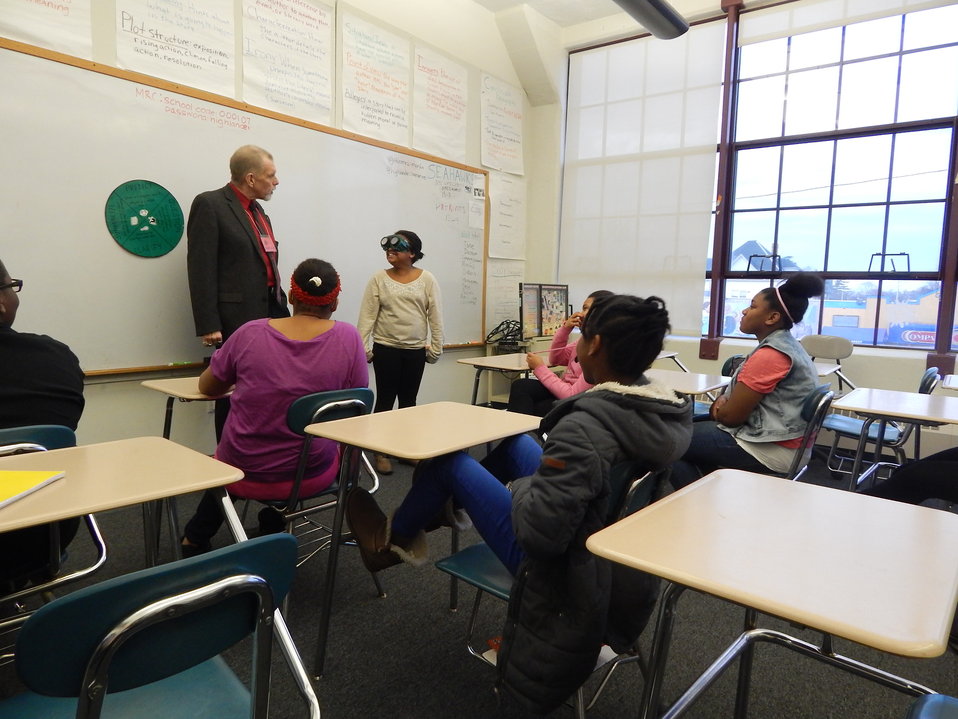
Substance Abuse Prevention during NDFW

100 students participated in the Substance Abuse Prevention Presentations at Highlander Charter School (HCS) and Bishop McVinney Middle School (BMMS) on January 31st, 2014 during National Drug Facts Week.